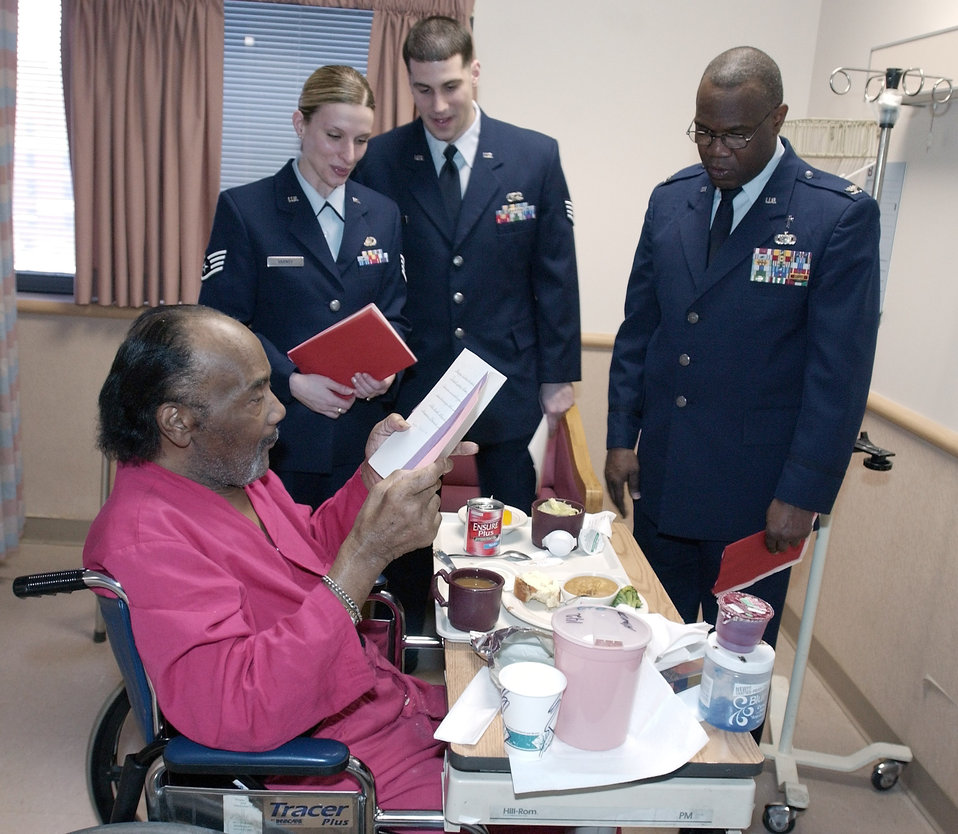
Salute to veterans

BALTIMORE (AFPN) -- Bolling Air Force Base, D.C., airmen visit a hospitalized veteran at the Baltimore veterans' hospital during the National Salute to Hospitalized Veterans Feb. 10. The airmen from the 11th Wing are (from left) Staff Sgts. Selena and Joe Varney and Chaplain (Col.) Harold Ray. The salute, established in 1978, is designed to pay tribute to America's veterans, increase awareness of the role of Department of Veteran Affairs medical facilities, and encourage people to visit hospitalized veterans.